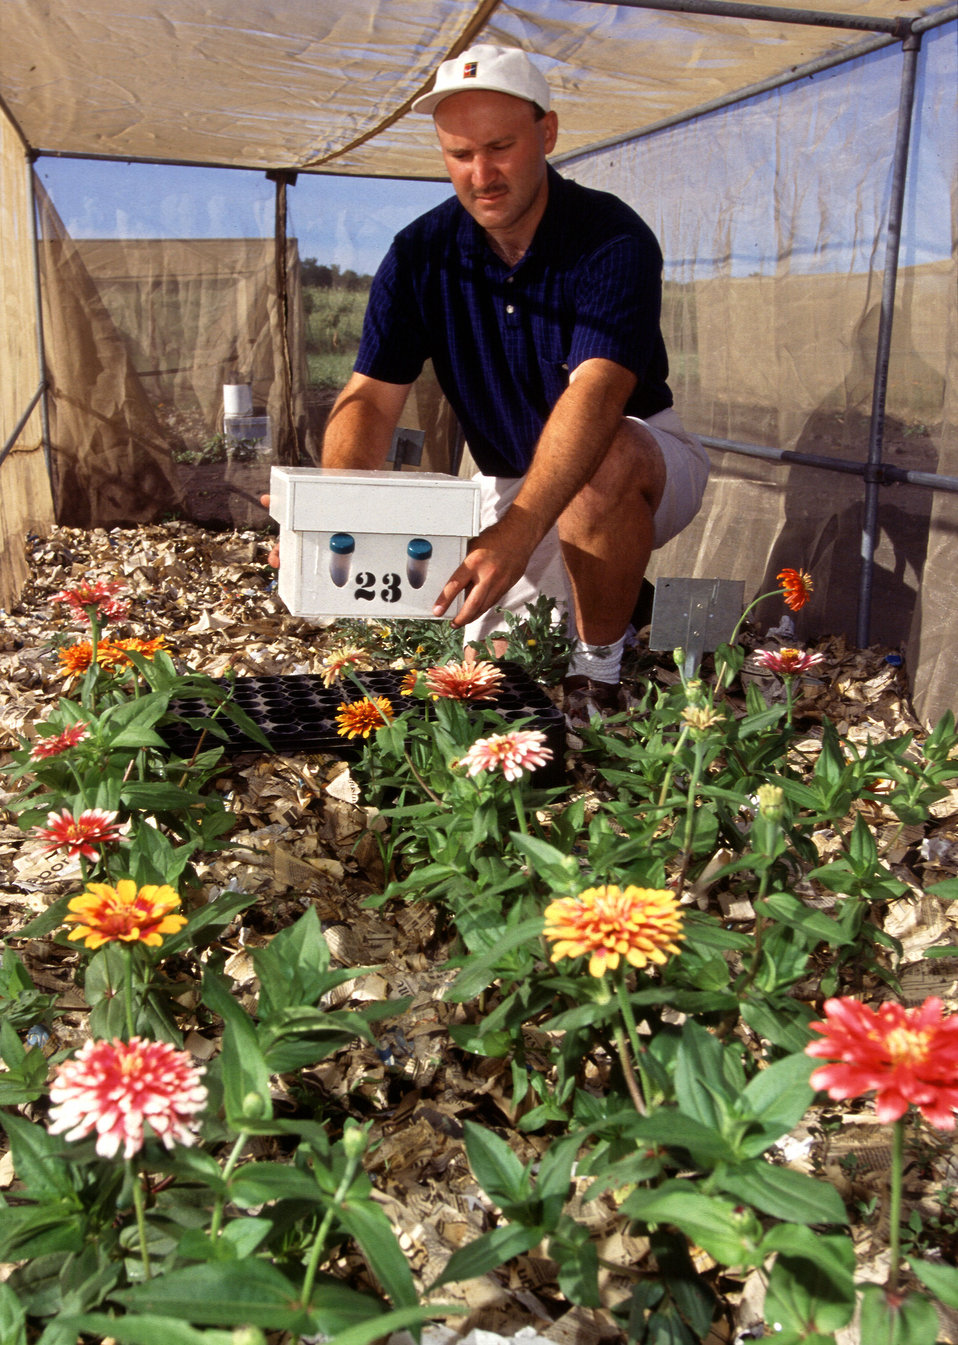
U.S. Department of Agriculture (USDA) Agricultural Research Service (ARS) entomologist Craig Abel introduces a hive of bumblebees into a field cage for controlled pollination of zinnias.